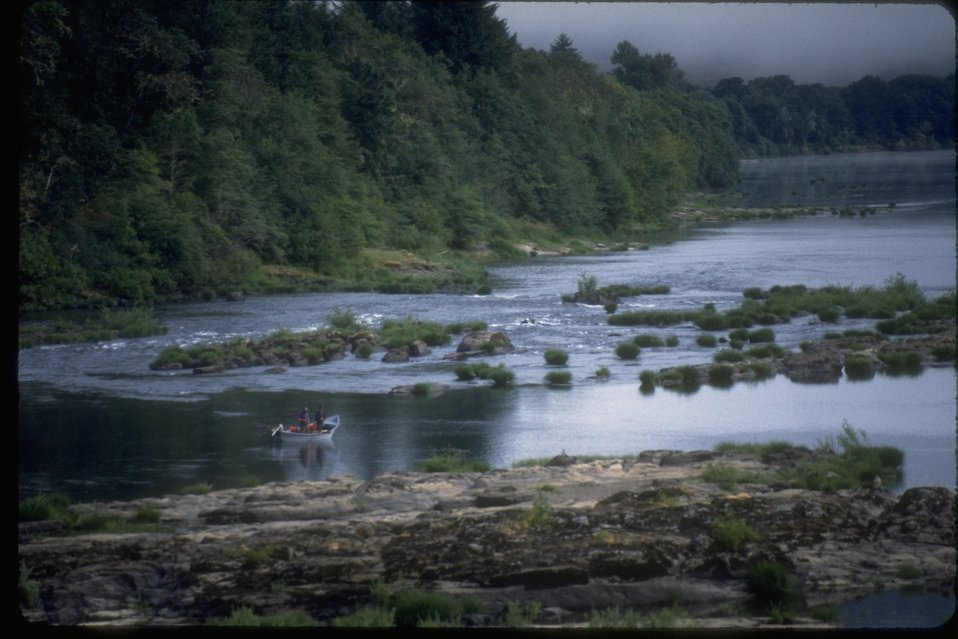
Drift Boat fishing in the Main Umpqua River.